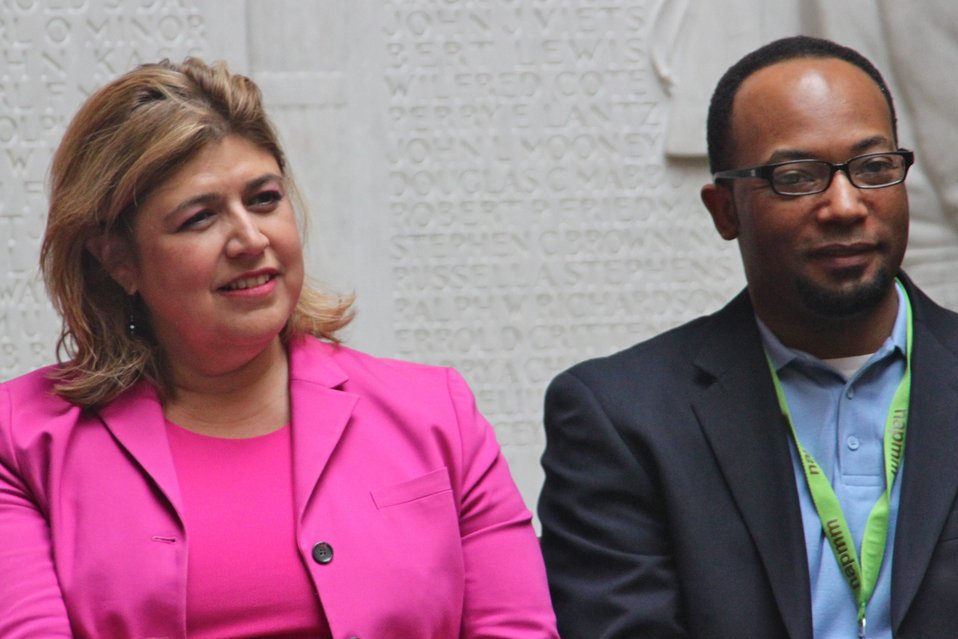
Alonzo and Neal

U.S. Department of Agriculture (USDA) Agricultural Marketing Service (AMS) Administrator Anne Alonzo and AMS Deputy Administrator Arthur Neal listen to remarks at USDA's Farmers Market opening on Friday, Jun. 7, 2013.